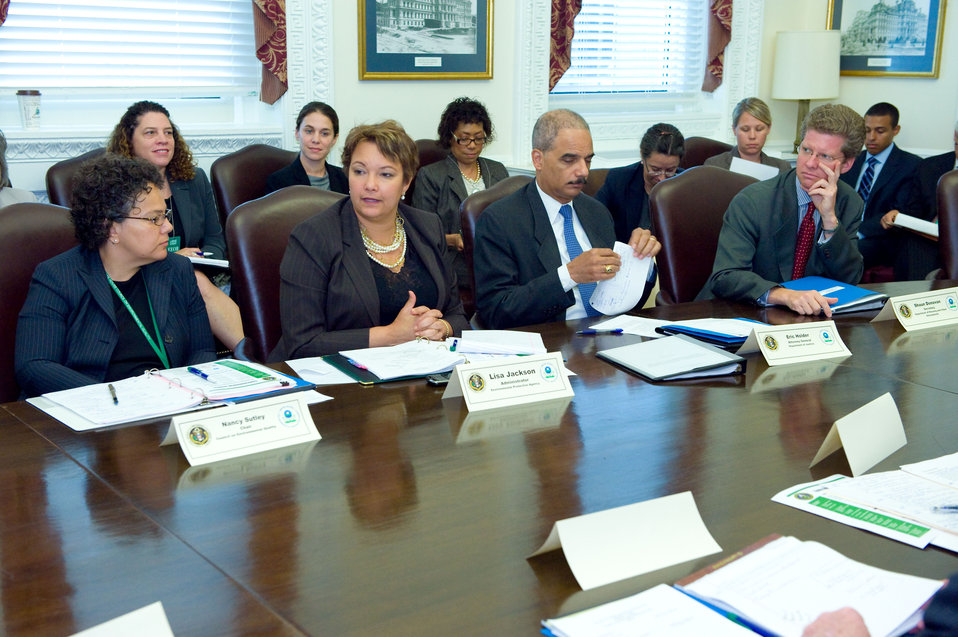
EPA Hosts Historic Meeting on Environmental Justice

Left to right around table, Nancy Sutley, Chair, Council on Environmental Quality, Lisa P. Jackson, Administrator, Environmental Protection Agency, Eric Holder, Attorney General, Shaun Donavan, Secretary, Department of Housing and Urban Development.

Read more about this historic meeting

Learn more about EPA